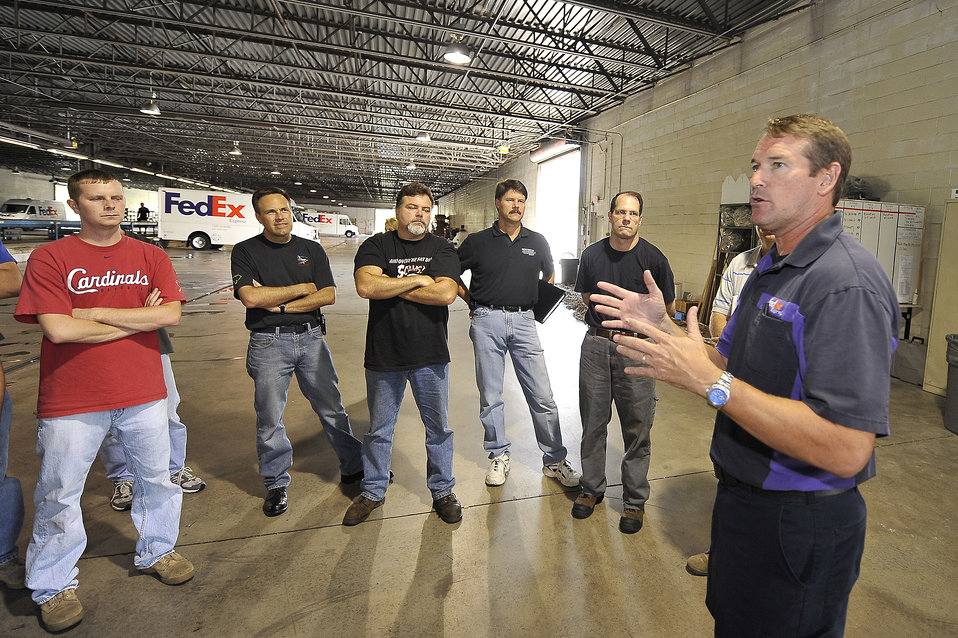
437th APS gets

John Devereux gives the 437th Aerial Port Squadron's Lean event team a briefing on daily operations at a FedEx facility Sept. 9, 2009 in North Charleston, S.C. The Lean event team visited the facility as part of an Air Force Smart Operations for the 21st Century initiative to stream line 437th APS workflow. Mr. Devereux is a manager of station operations for FedEx.